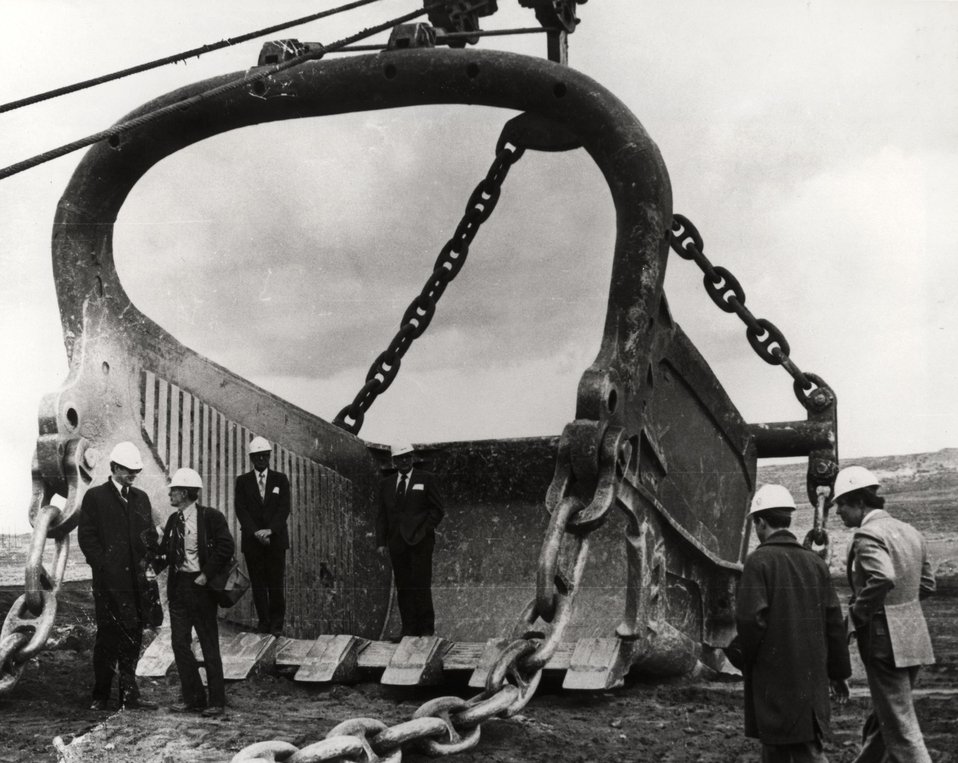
A 78-yard bucket had enough room to handle the whole tour crowd at a tour of Medicine Bow Coal Mine in Hanna, Wyoming. The mine is expected to produce 3 million tons of coal a year for 10 years. c. 1976